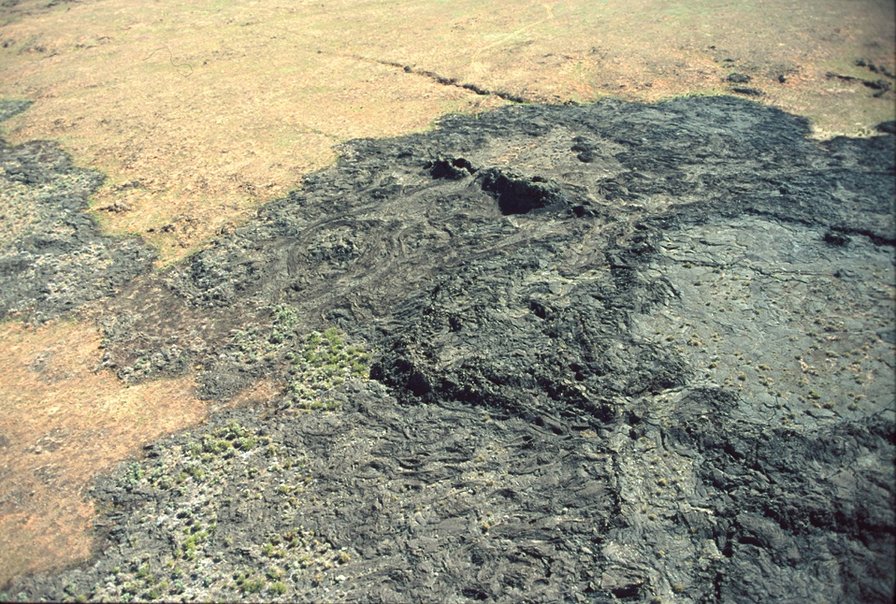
Shoshone Field Office USRD Upper Snake River District